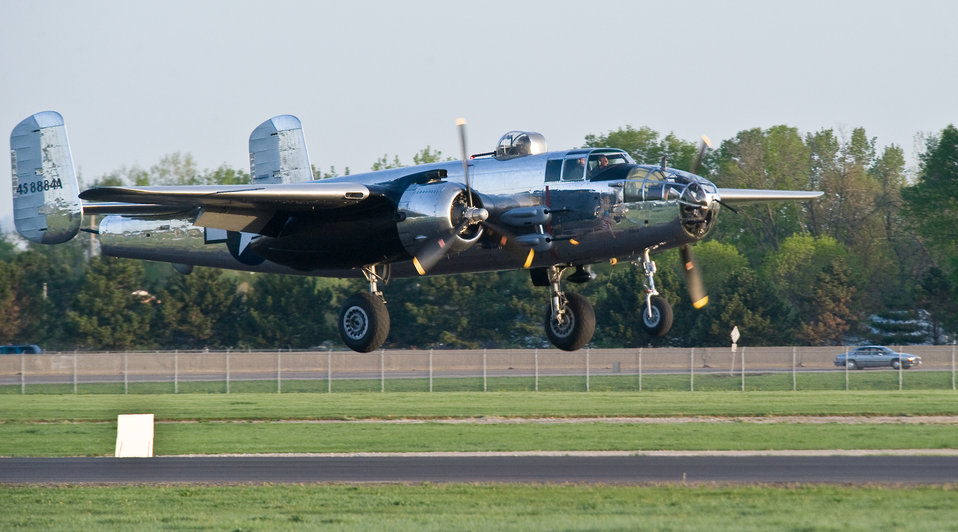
Mass B-25 Arrival